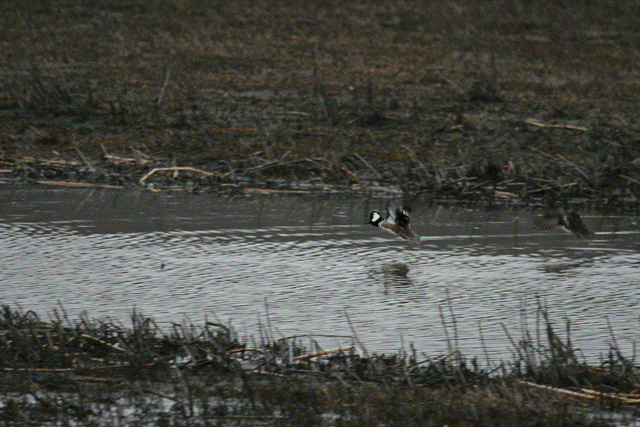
Hooded Merganser Pair

Hooded mergansers have a crest at the back of the head which can be expanded or contracted. In adult males, this crest has a large white patch, the head is black and the sides of the duck are reddish-brown. The adult female has a reddish crest, with much of the rest of the head and body a greyish-brown. The Hooded merganser has a sawbill, but is not classified as a typical merganser.